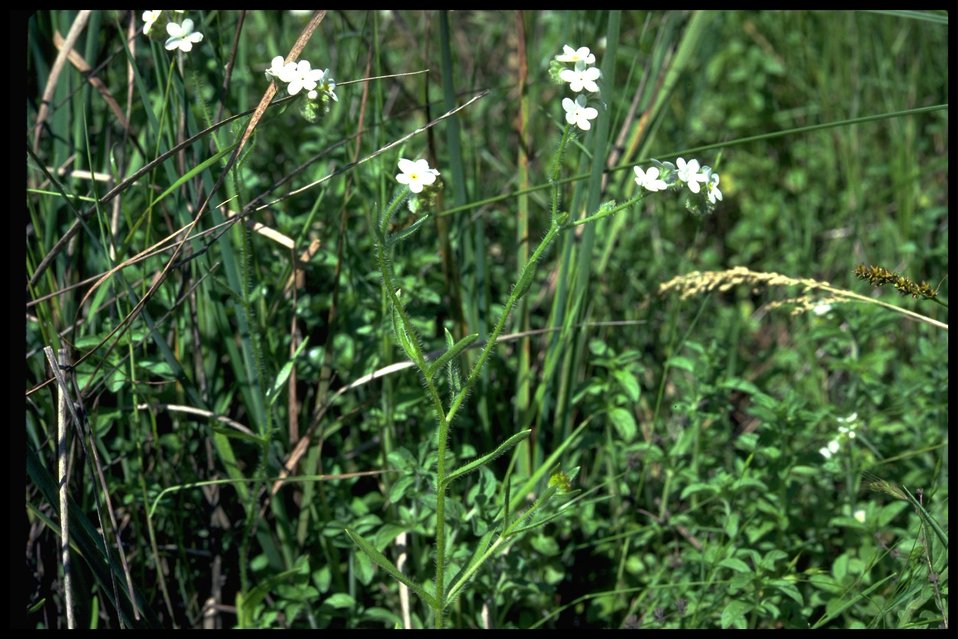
Plagiobothrys hirtus, commonly known as the Rough Popcorn Flower.